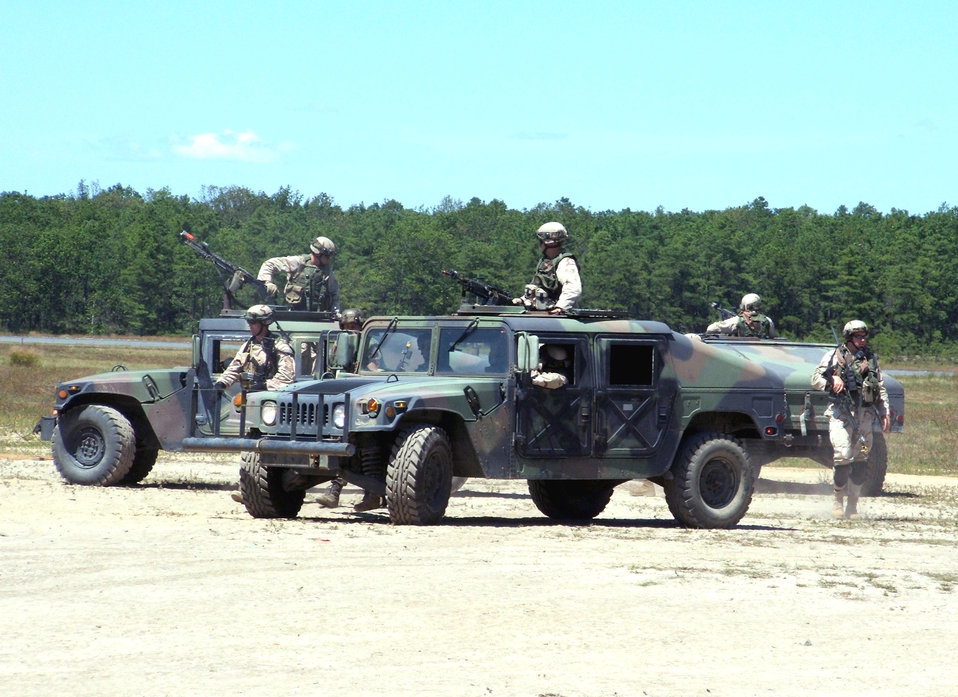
Phoenix Warrior prepares security forces

Security forces Airmen set up security measures while attending the Air Mobility Warfare Center's Phoenix Warrior 06-1 course at Naval Air Engineering Station Lakehurst, N.J., on Aug. 13. The course prepares security forces for their next air expeditionary force rotational deployment.